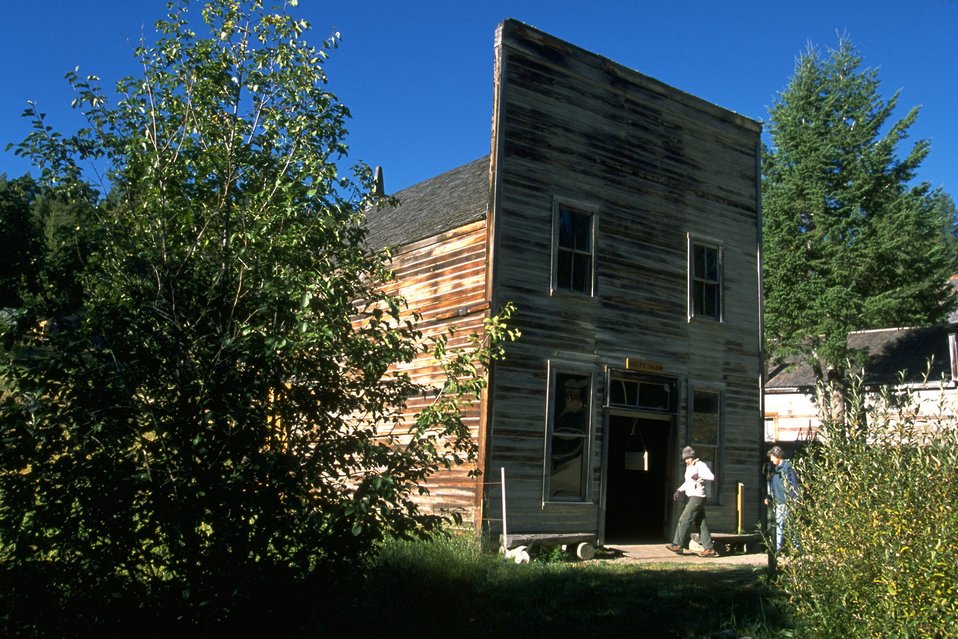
Kelly's Saloon at Garnet Ghost Town east of Missoula